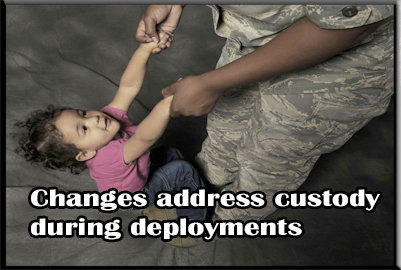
Deployment custody